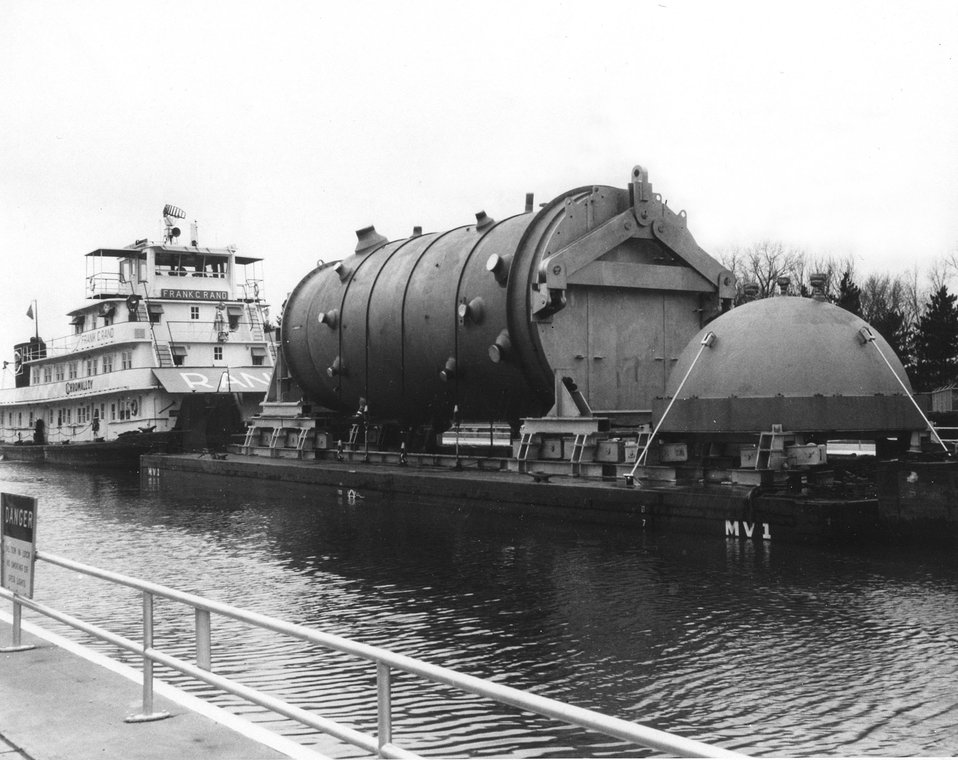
The largest nuclear reactor vessel ever build arrived at the Commonwealth Edison Company's Dresden nuclear power station near Morris, Illinois. Circa 1968.